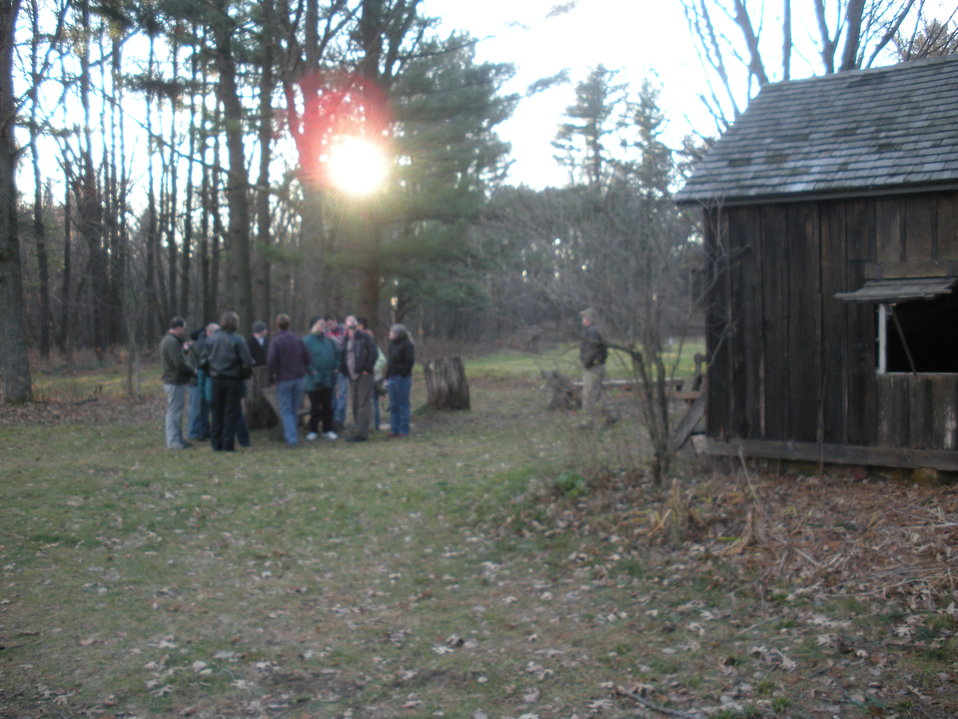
Group by the Shack